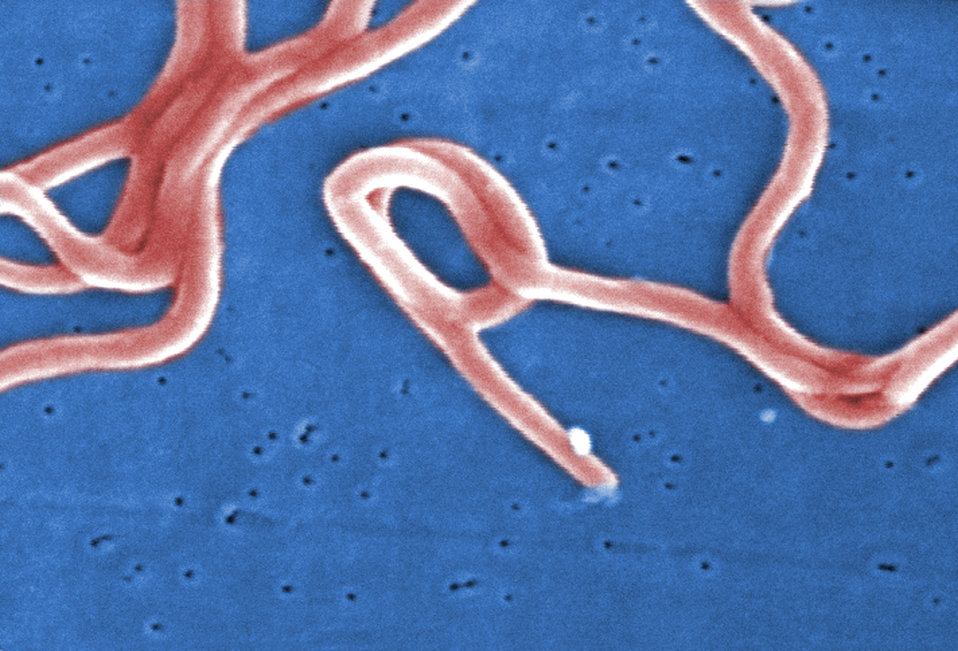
Under a high magnification, this digitally-colorized scanning electron micrograph depicts a grouping of Gram-negative, anaerobic, Borrelia burgdorferi bacteria, which had been derived from a pure culture.